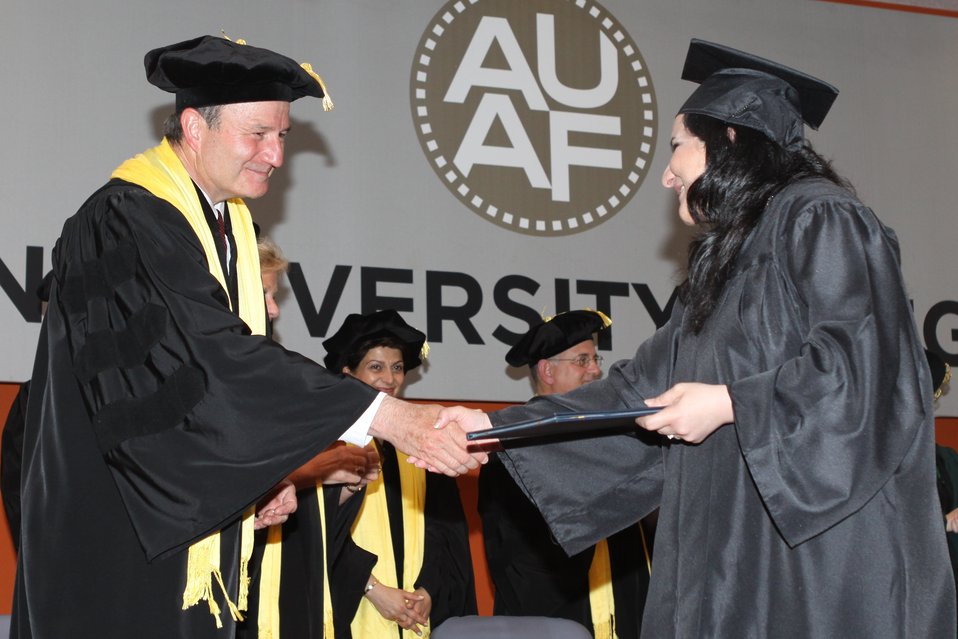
100526 AUAF Graduation 285